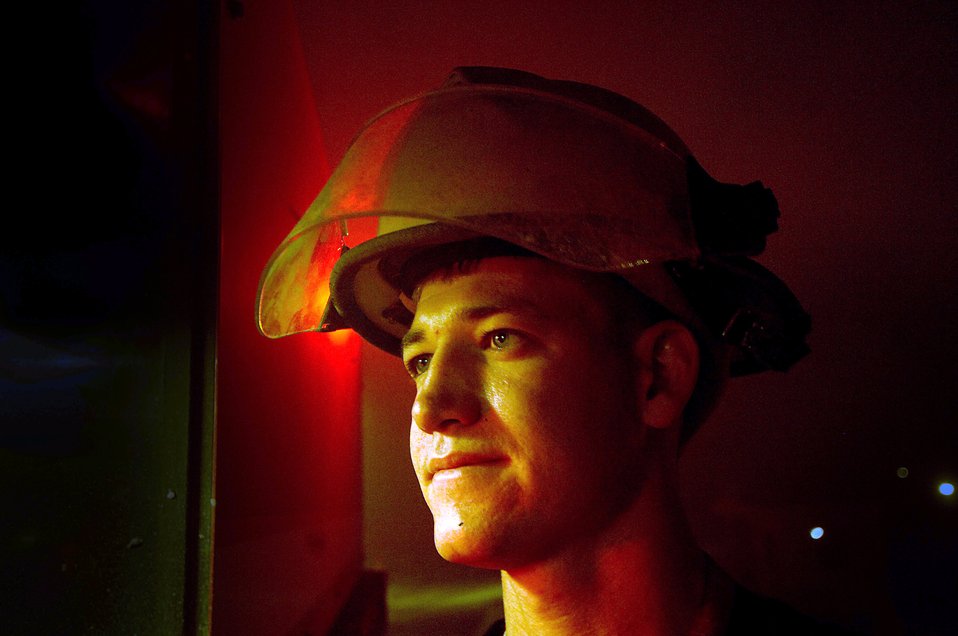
Firefighters battle blaze in Iraq

John Ode from contractor Wackenhut Fire and Emergency Service stays with the fire truck while fellow firefighters battle a blaze at Forward Operating Base Marez in Mosul, Iraq, on Thursday, June 8. The fire was at a local restaurant and jewelry store.